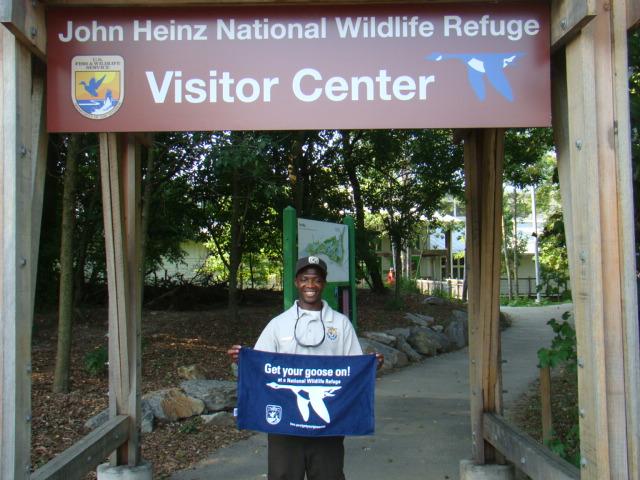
Tajuan Levy shows off the 'Get your goose on' towel.

U.S. Fish and Wildlife Service